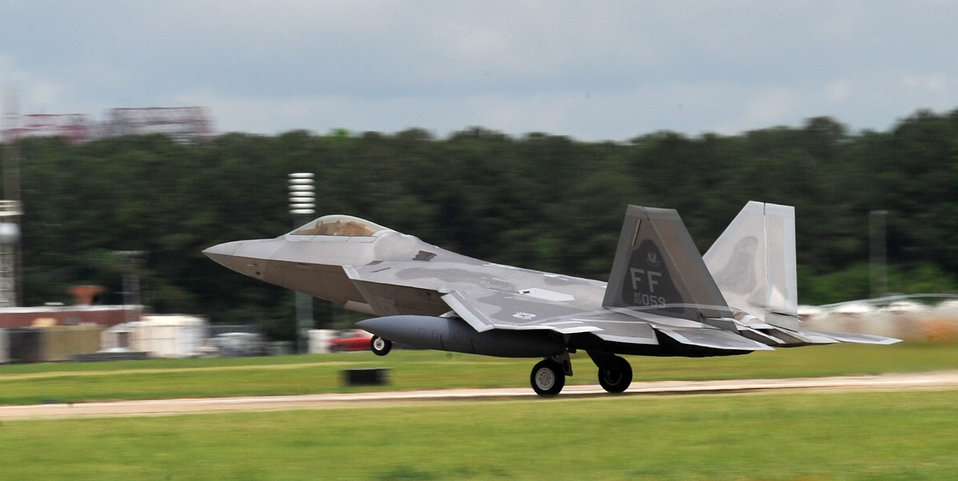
Airmen, F-22s support Pacific presence mission

An F-22 Raptor from the 94th Fighter Squadron takes off from Langley Air Force Base, Va., May 26 for Kadena Air Base, Japan. More than 280 Langley AFB Airmen and 12 F-22s departed this week for an air and space expeditionary force deployment, which demonstrates the continued U.S. commitment to fulfill its security responsibilities throughout the Western Pacific.